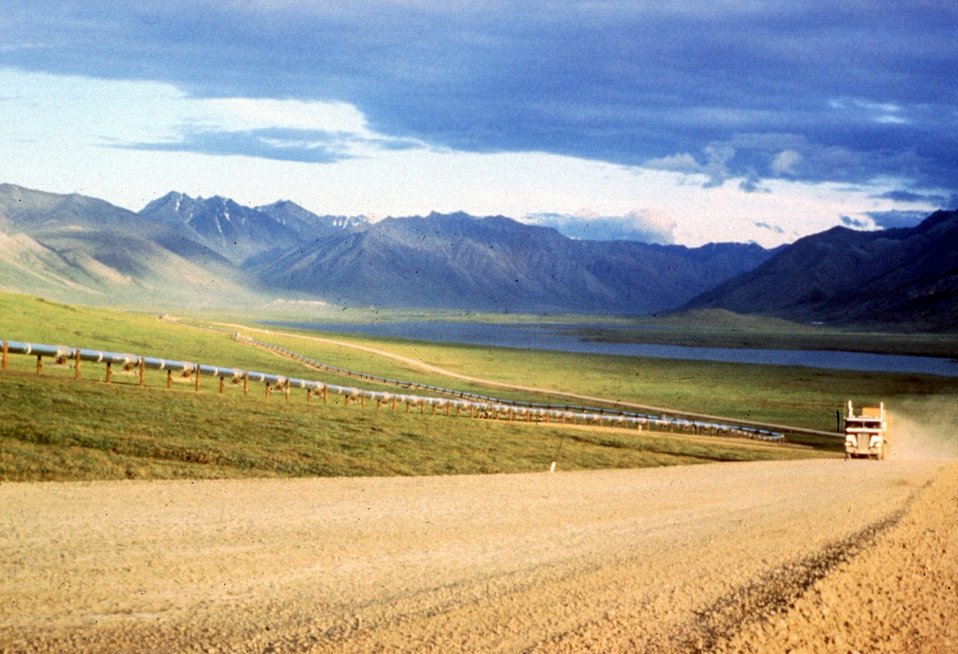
Dalton Highway north of Galbraith Lake